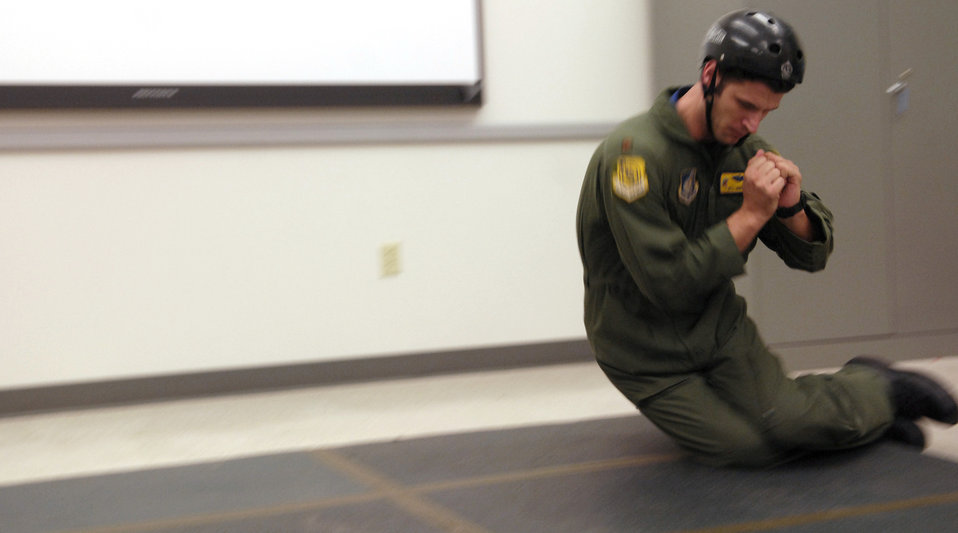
SERE Instructors

Maj. Will Martin, a pilot with the 535th Airlift Squadron at Hickam Air Force Base, Hawaii, practices a parachute landing roll during a refresher parachute training class Jan 24. Aircrews require annual non-ejection parachute training so they are current according to Air Force instructions.